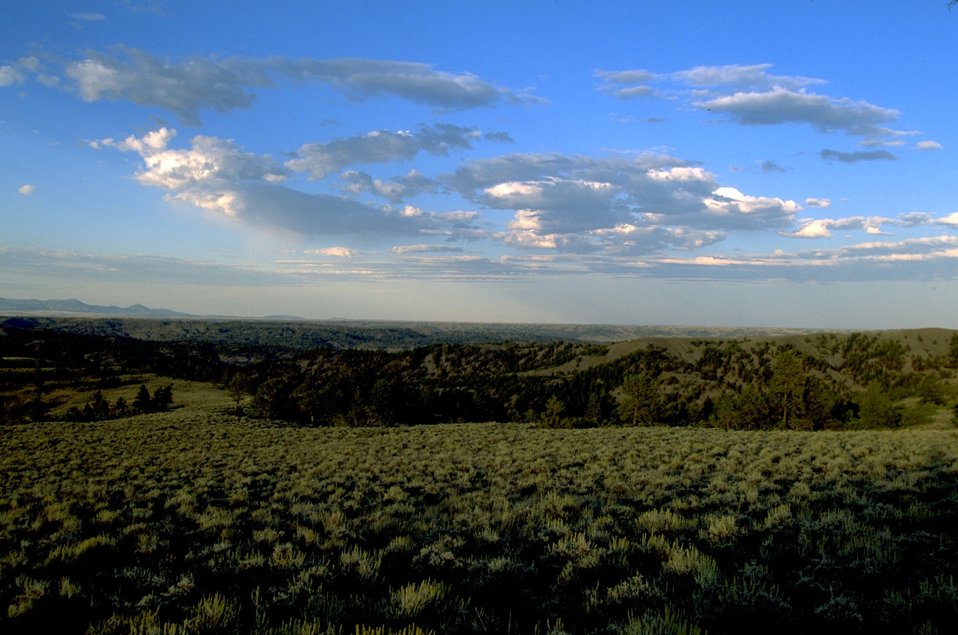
Missouri Breaks Scenery